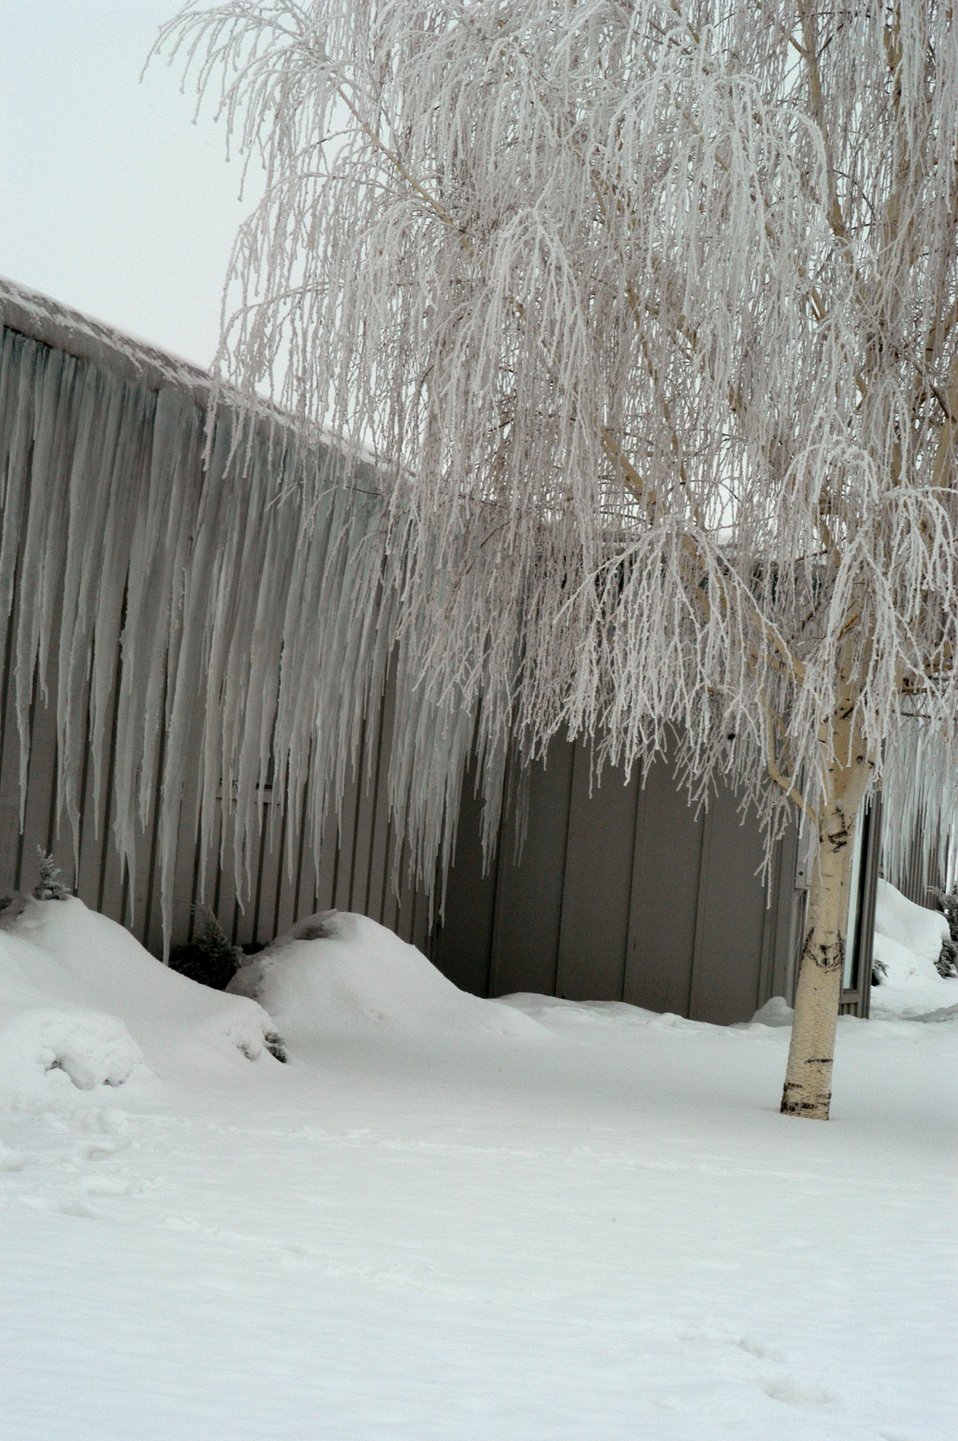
Burns District Office in Hines, Oregon January 22, 2004. Depicts snow accumulations with alternating thawing and freezing temperatures that created icicles over a two week period.